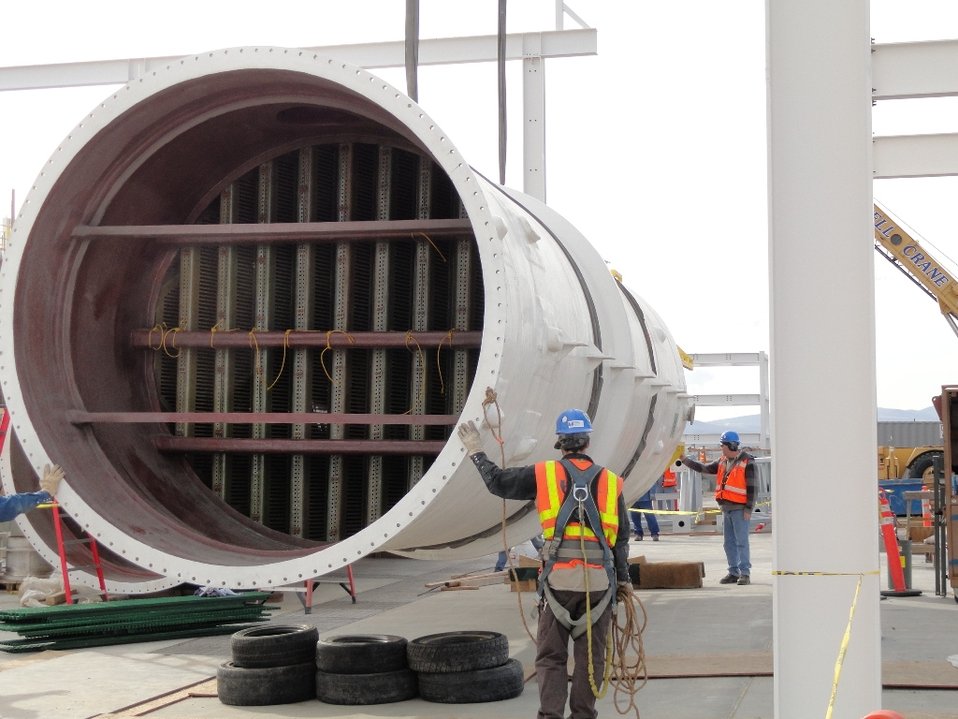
Recovery Act Supports Construction of Site’s Largest Groundwater Treatment Facility

Recovery Act workers in various stages of construction of what will be the largest groundwater treatment facility at the Hanford Site.